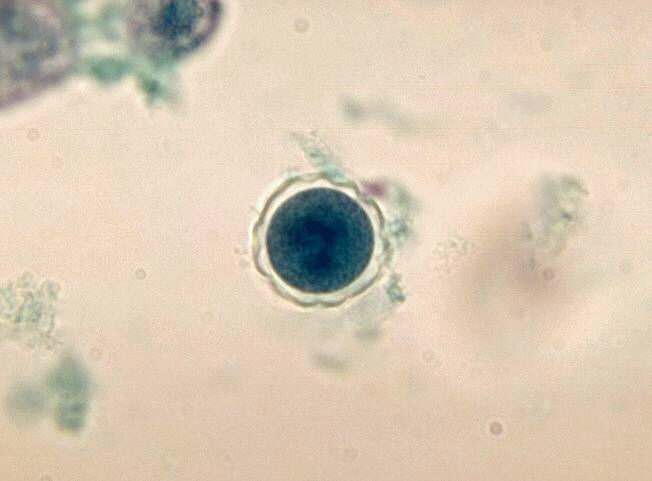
Hartmannella vermiformis cyst with wrinkled wall. Trichrome stain.